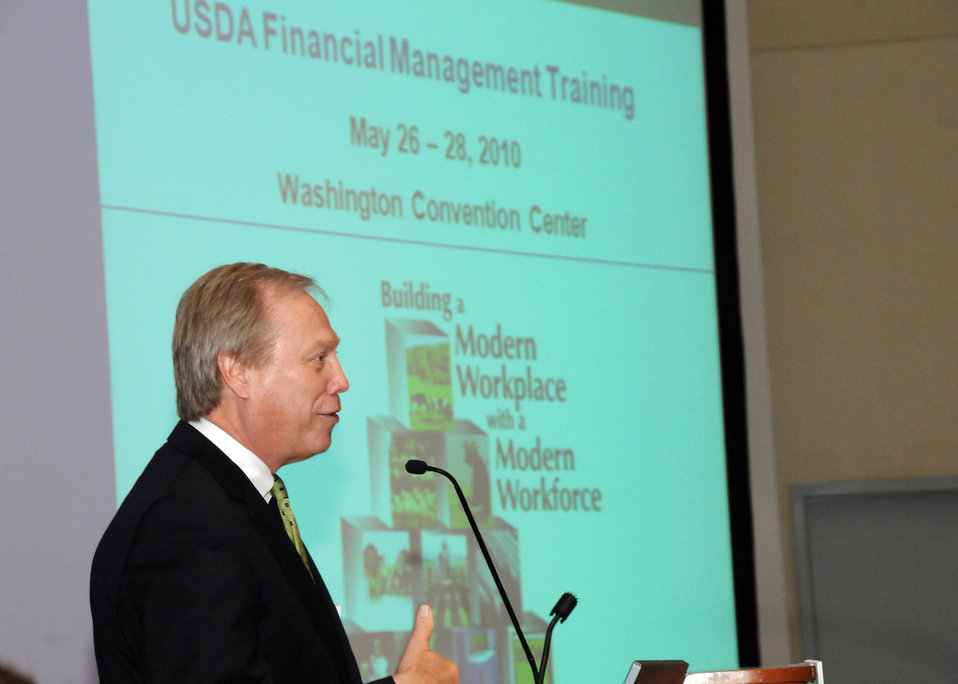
Associate Chief Financial Officer-Financial Operations John Brewer makes opening remarks at the Financial Management Training Conference held in Washington, D. C., on May 26, 2010. USDA photo 10di1371-17.